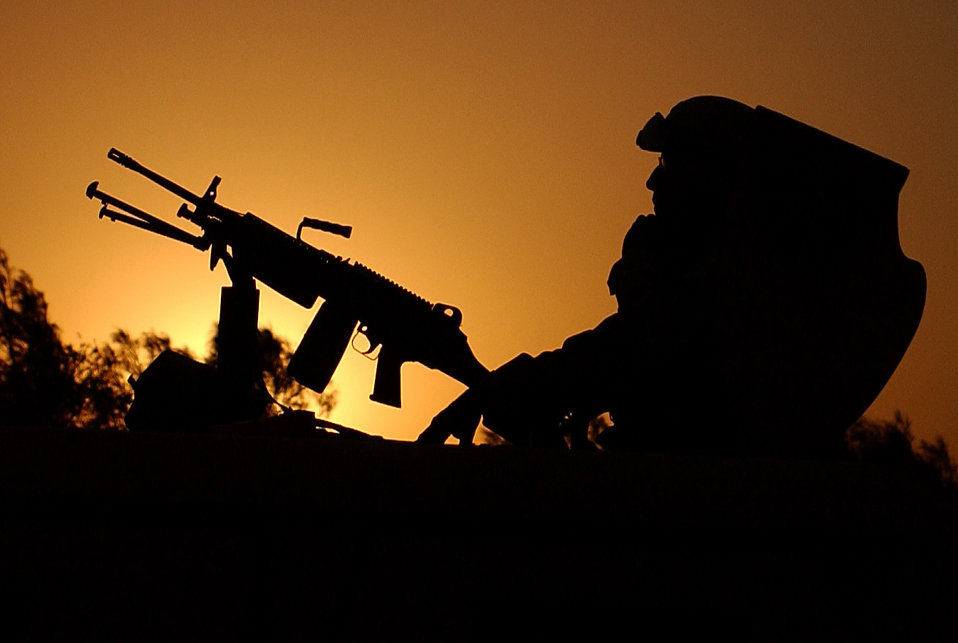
Sunset on the border

OPERATION IRAQI FREEDOM -- Traffic ceases at the Iraq border at sunset during Operation Iraqi Freedom on April 1, 2003. Operation Iraqi Freedom is the multinational coalition effort to liberate the Iraqi people, eliminate Iraqi's weapons of mass destruction and end the regime of Saddam Hussein.